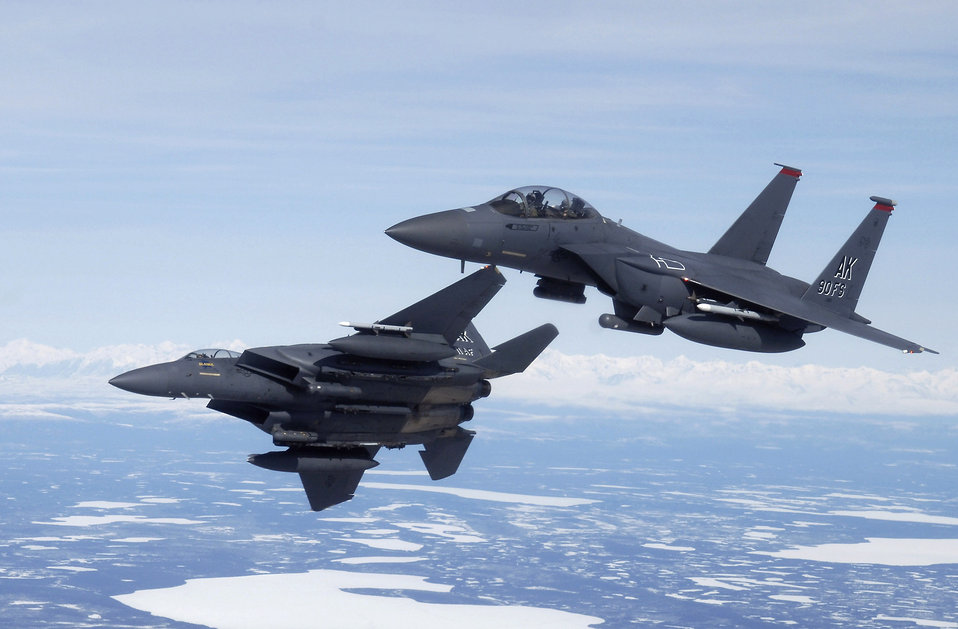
Alaskan Eagles

Two F-15E Strike Eagles maneuver to bomb a ground target during a training flight April 20 over Alaska. The F-15Es are assigned to the 90th Fighter Squadron at Elmendorf Air Force Base, Alaska, which traces its history back to August 1917. An array of avionics and electronics systems gives the F-15E the capability to fight at low altitude, day or night, and in all weather. The F-15E at Elmendorf AFB will soon be replaced by the F-22 Raptor.